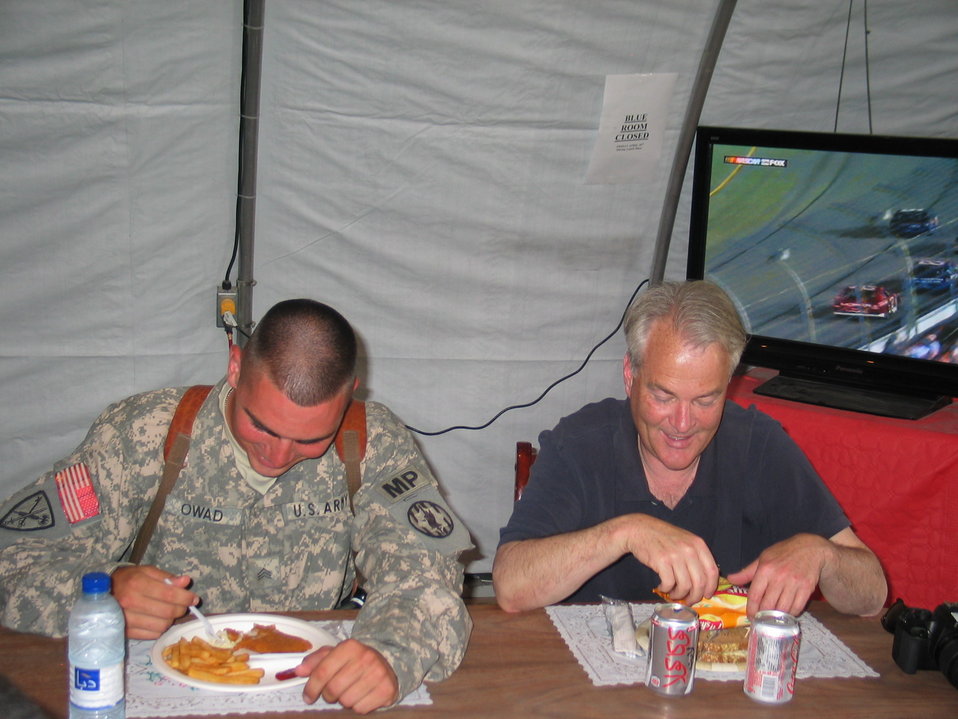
CODEL Berman